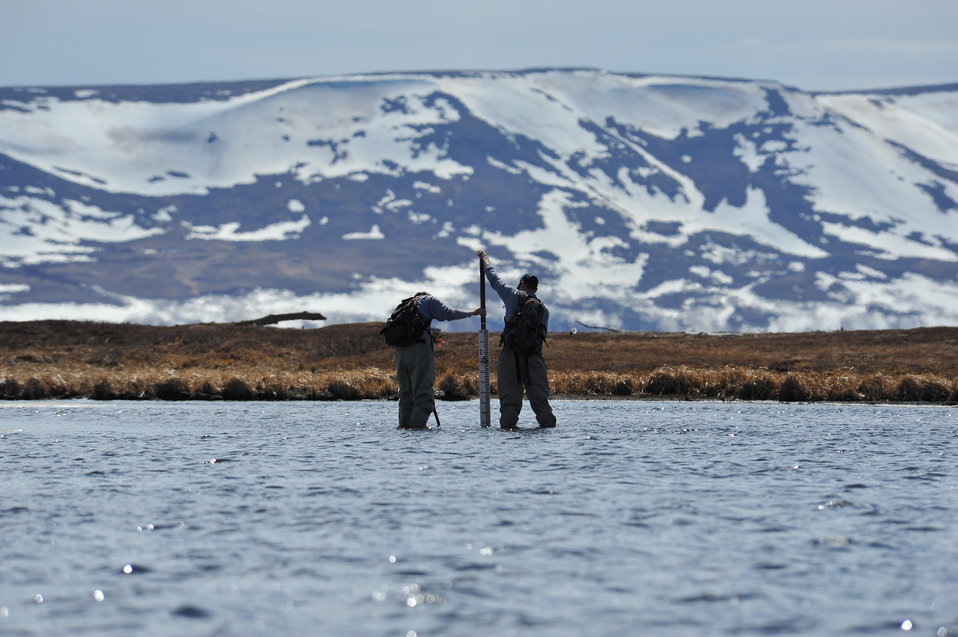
Data loggers are one way to collect information on changes in water level, salinity, temperature, etc. in different water bodies (lakes, ponds, sloughs, rivers). These types of tools are important in studying hydrology of different ecosystems. Information gathered from data loggers can be used to document changes that are occurring and, through modeling, project future changes that may occur.

These data loggers are being installed in the coastal zone to document tidal, seasonal, and yearly changes in hydrology on Kigigak Island.

USFWS Yukon Delta NWR